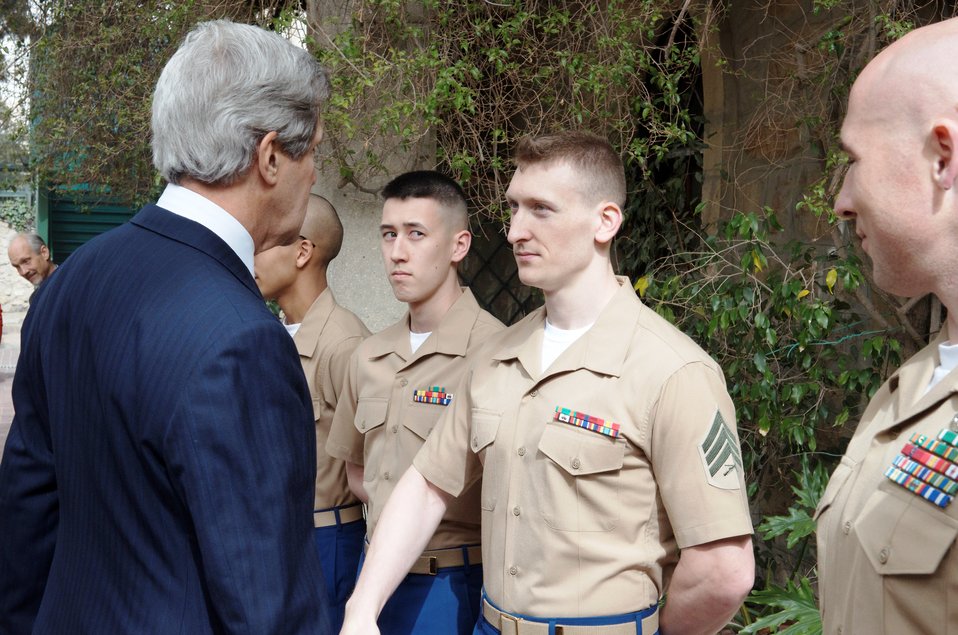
Secretary Kerry Shakes Hands With Marine Security Guards

U.S. Secretary of State John Kerry speaks with U.S. Marine Security Guards at the U.S. Consulate General in Jerusalem on April 8, 2013.